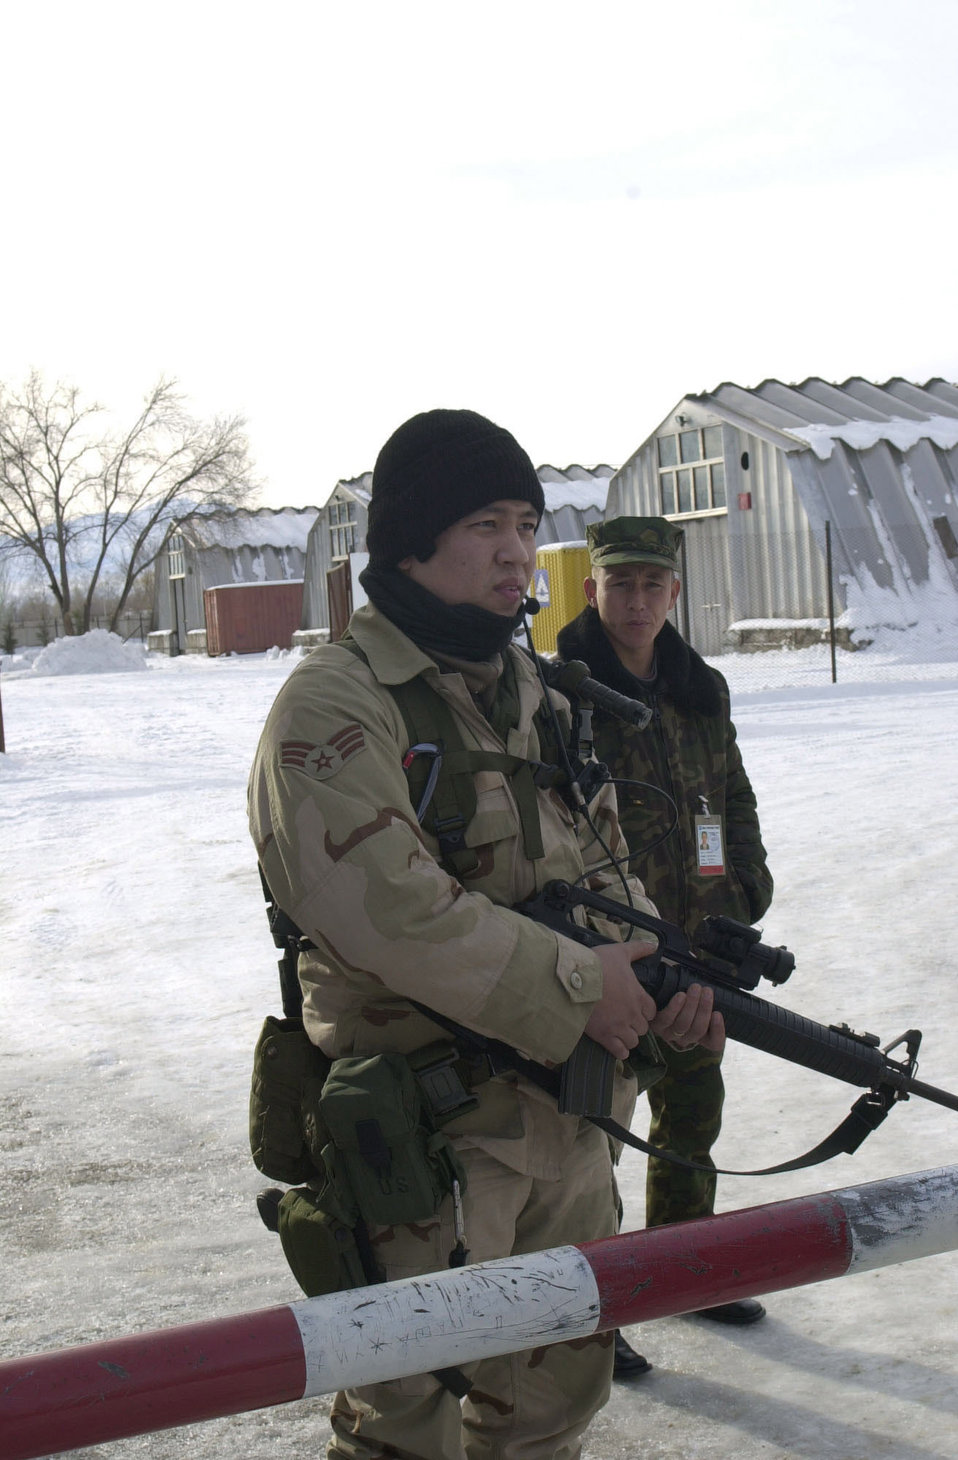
Working with the locals

OPERATION ENDURING FREEDOM -- Senior Airman Dan Asher, a security policeman from the 786th Security Forces Squadron at Sembach Air Base, Germany, guards the entry control point along side a local national, Subanaly Batyrkulov, at an Operation Enduring Freedom location.